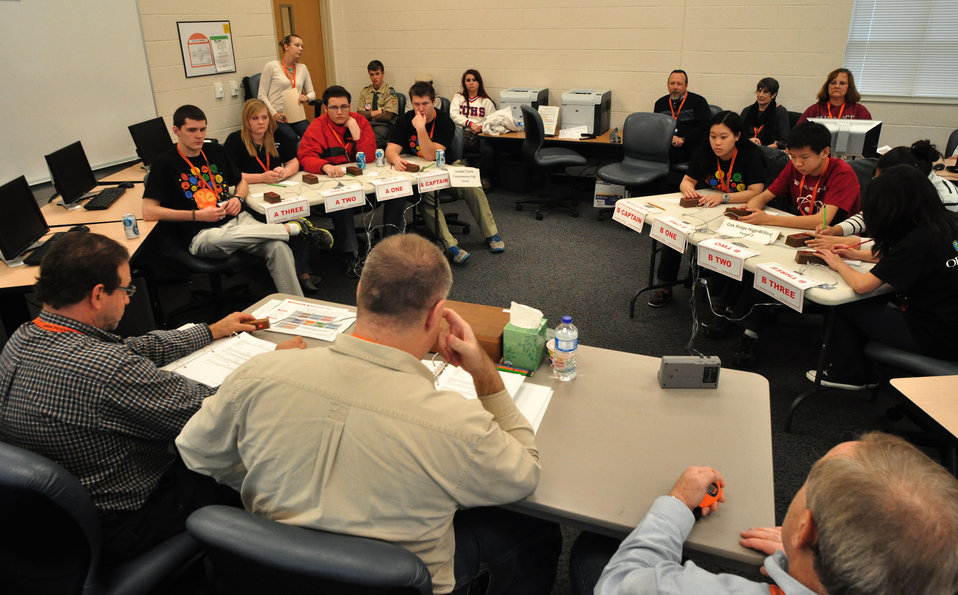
Campbell County and Oak Ridge Tennessee Science Bowl 2013

13-010 DOE photo Lynn Freeny 2-23-2013 Maryville Tennessee